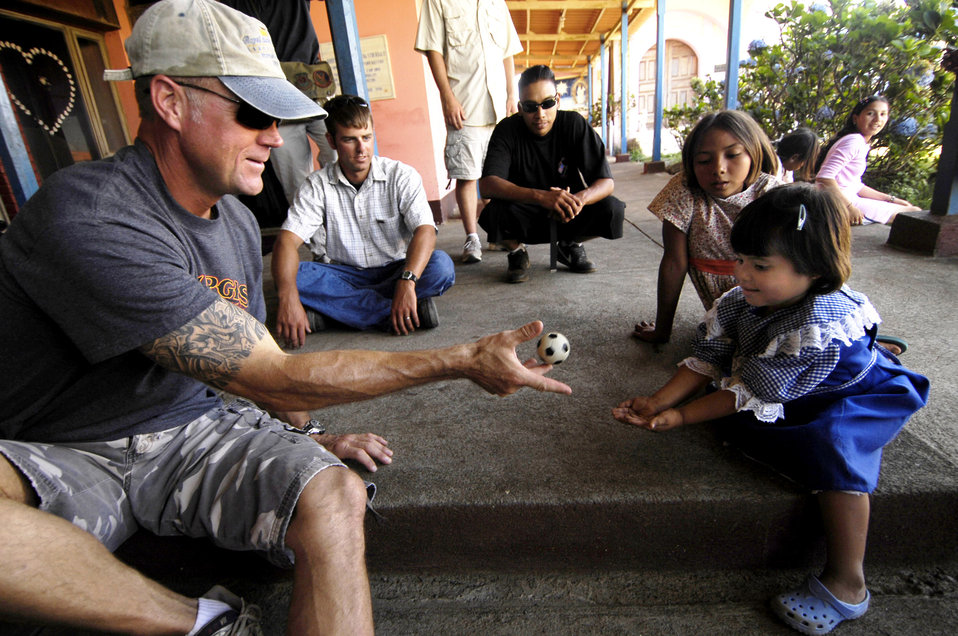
Airmen visit Nicaraguan orphanages, deliver donations

Senior Master Sgt. Vincent Hoffman tosses a ball to one of the orphan girls at the Siervas del Divino Rostro orphanage April 7 in Santa Teresa, Nicaragua. He and 35 other Camp RED HORSE members delivered more than $500, more than 80 books and more than 100 toys to the children at that orphanage and the ABC Feed the Children orphanage in Santa Teresa. Sergeant Hoffman is the Camp RED HORSE first sergeant.